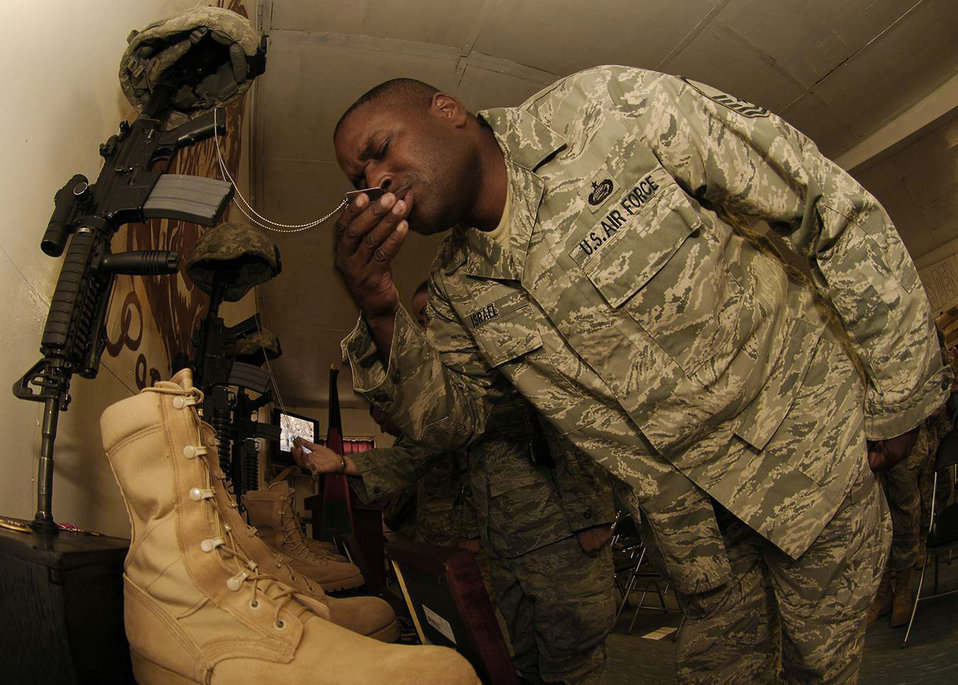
Panjshir reconstruction team bids farewell to fallen comrades

Master Sgt. Roderick Israel kisses the dog tags of Lt. Col. Mark Stratton during a May 31 memorial at Forward Operating Base Lion, Afghanistan. Colonel Stratton, the reconstruction team's commander, was killed along with three team members when their convoy vehicle was struck by a suicide car bomber May 26. The memorial also honored Army Master Sgt. Blue Rowe, the unit first sergeant, Senior Airman Ashton Goodman, a convoy driver, and Abdul Samad who served as the unit's local legal expert. Sergeant Israel is a member of the Panjshir Provincial Reconstruction Team.